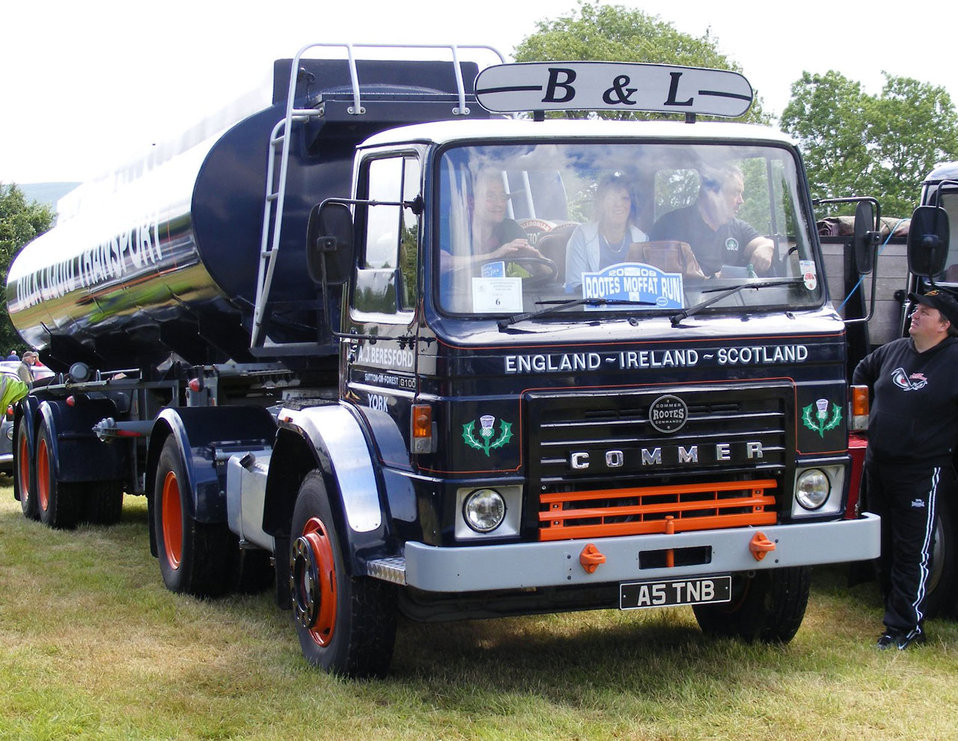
Vintage lorry taken at static car rally.